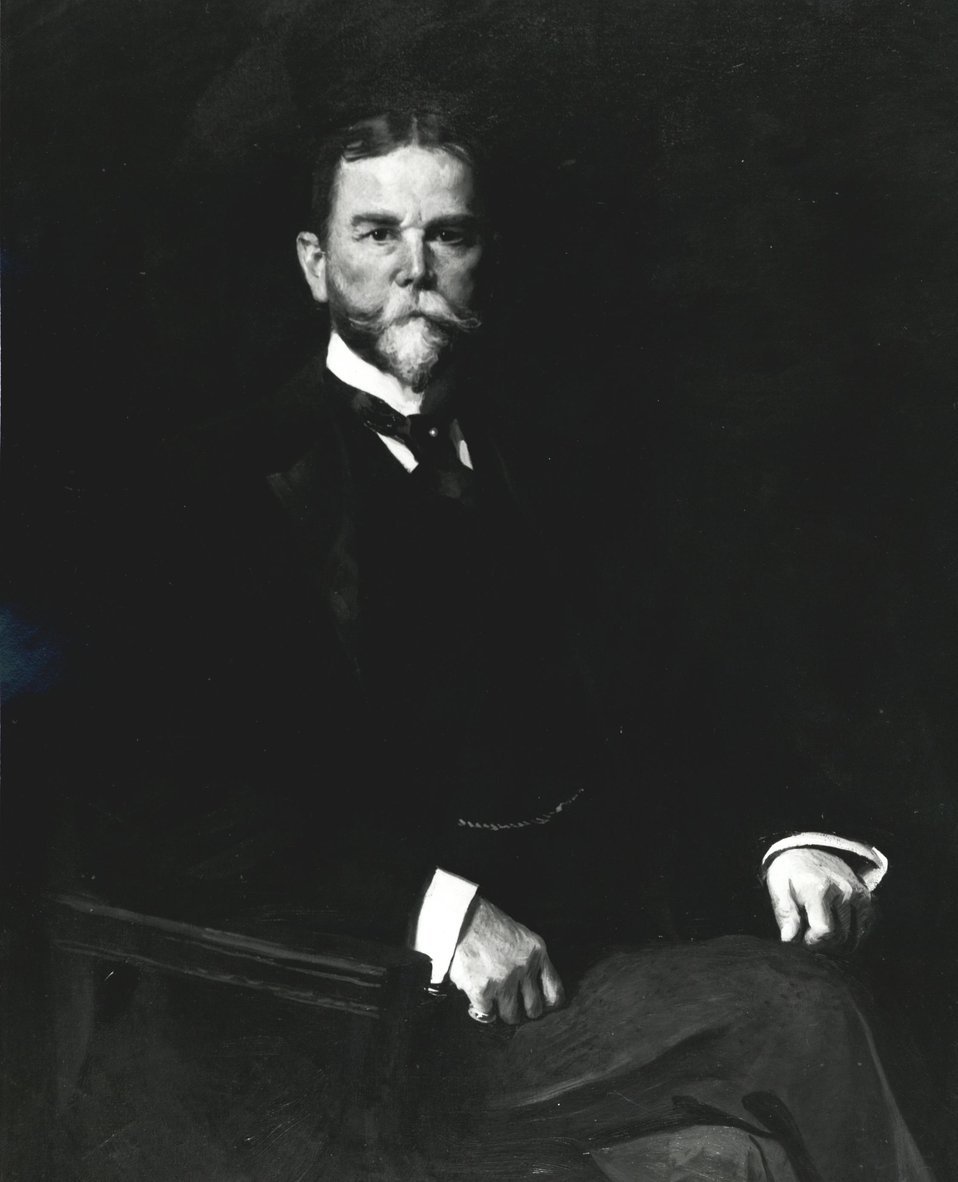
John Hay, U.S. Secretary of State, September 30, 1898 to July 1, 1905